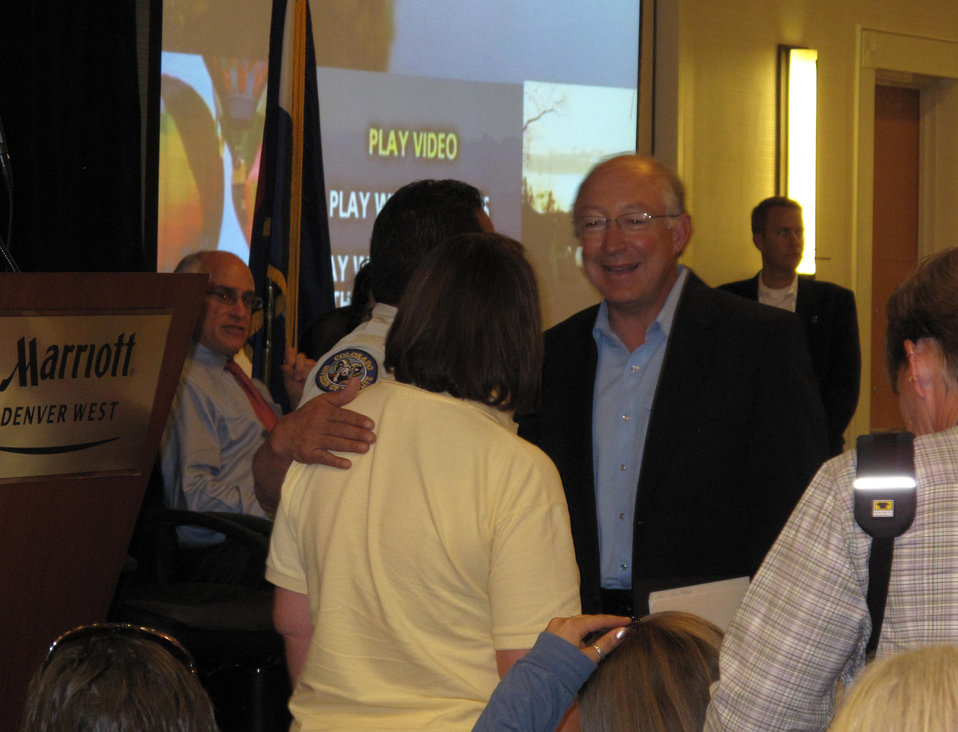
America's Great Outdoors Initiative

Secretary Salazar thanking leaders of Elkkids.org for their work with Colorado kids.